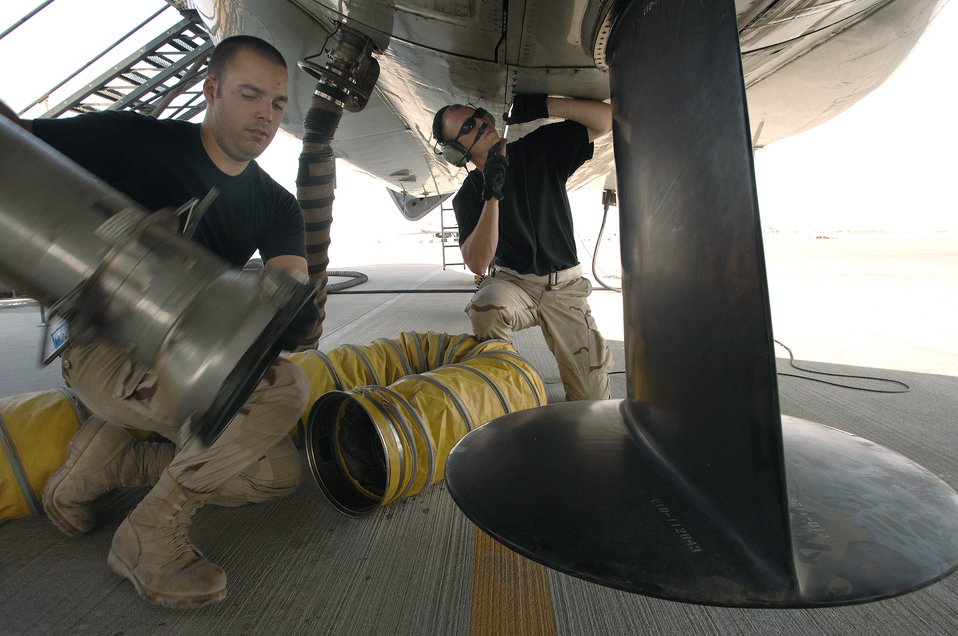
Reconnaissance aircraft, team reach milestone

Senior Airman Matthew Campbell and Airman 1st Class Jonathan Campana remove air conditioning hoses from an RC-135 Rivet Joint reconnaissance aircraft prior to its departure for a mission over Southwest Asia. The air conditioning system helps maintain cool temperatures for the extensive electronics onboard the plane during the lengthy start up process. Both Airmen are crew chiefs deployed from the 55th Aircraft Maintenance Squadron, Offutt Air Force Base, Neb.